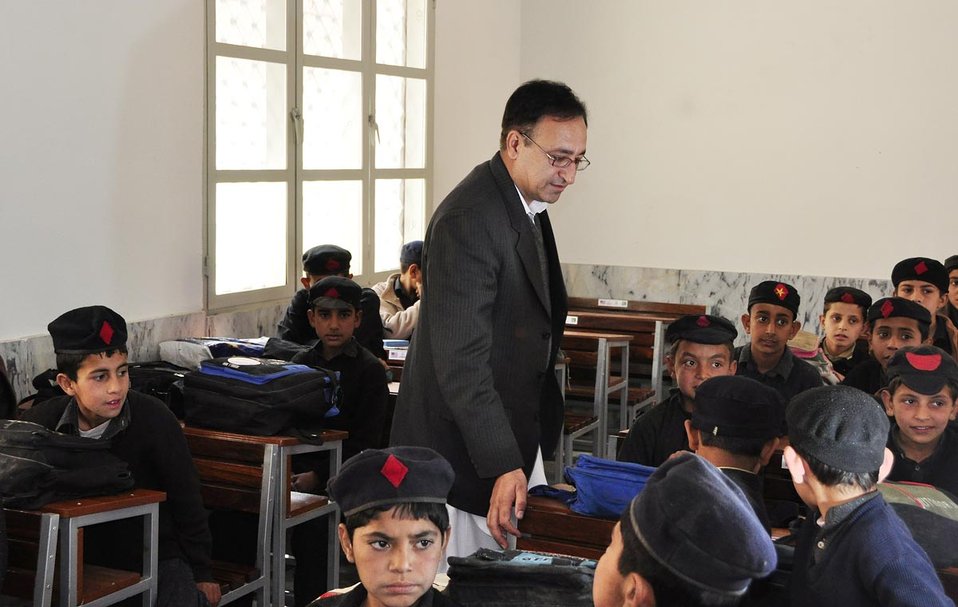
Buner School

Peshawar, March 14, 2012 - The Provincial Reconstruction, Rehabilitation and Settlement Authority (PaRRSA) handed over today to the KP Education Department the first of the 122 U.S. Government-sponsored schools at Torwarsak, Buner.